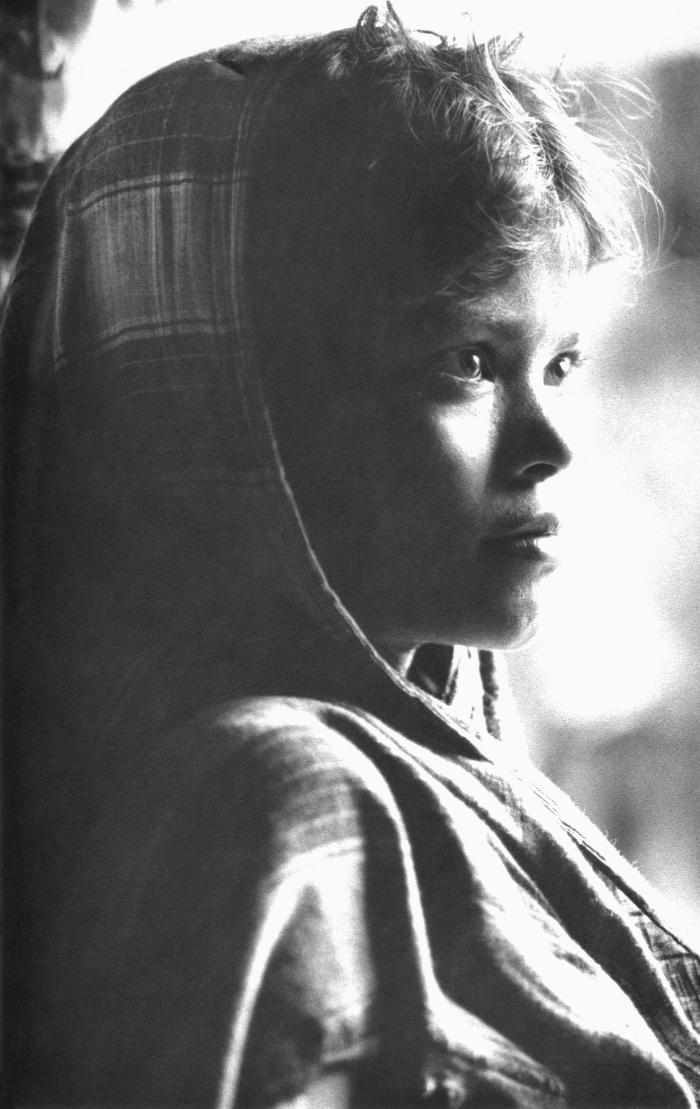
The young girl shown here, was a Bangladesh inhabitant, and at the time was one of only a few females available to be photographed. This image provided by Dr. Stan Foster, and captured by Pierre Claquin, M.D., B.A.C., who at the time was a member of the World Health Organization's Smallpox Eradication Program. It was part of a series photographed by former E.I.S. officer, Stanley O. Foster M.D., M.P.H., and was one of a series entitled 'The Story of One Smallpox Jeep', which depicted the travails faced by the jeep, and its occupants of public health practitioners, as they road through the Bangladesh countryside in an attempt to eradicate smallpox from the country.